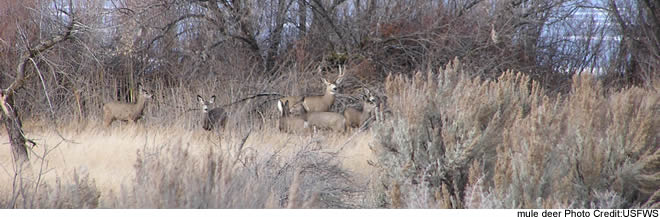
Mule deer - Minidoka NWR

Mule deer are a common sight at Minidoka NWR along the Snake River in south-central Idaho.